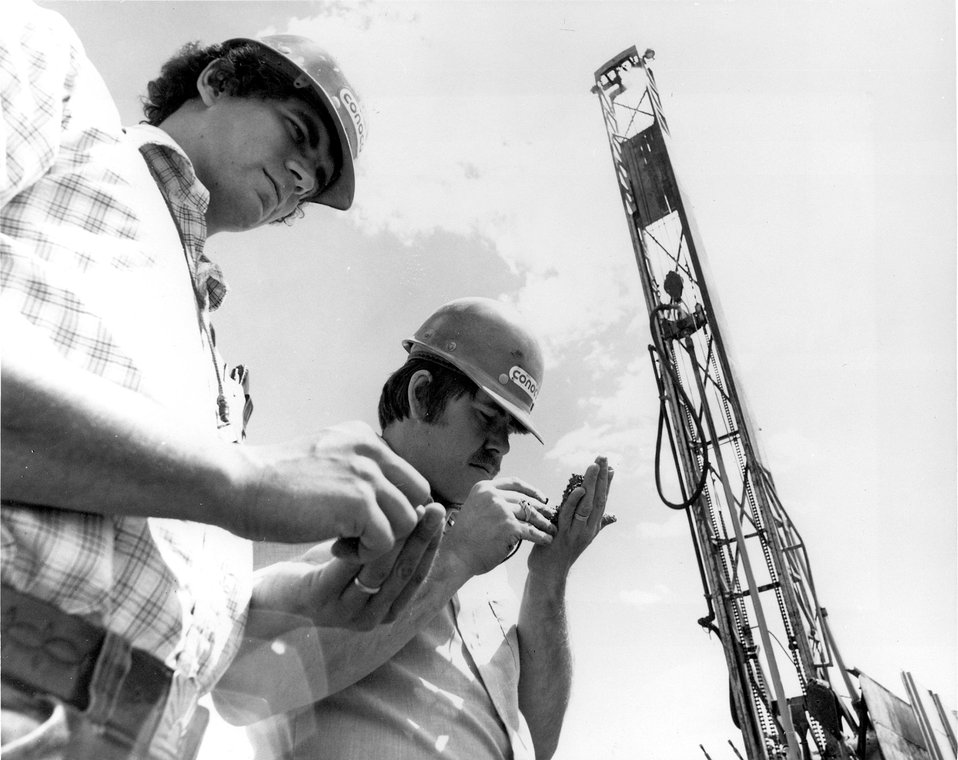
Project geologist of Conoco's uranium exploration operation on the Powder Rover Basin site in Wyoming. Ed Russell (right) and student geologist, Bob Grabb of Bozeman, Montana, examine cuttings from uranium exploration drilling rig. c. 1976